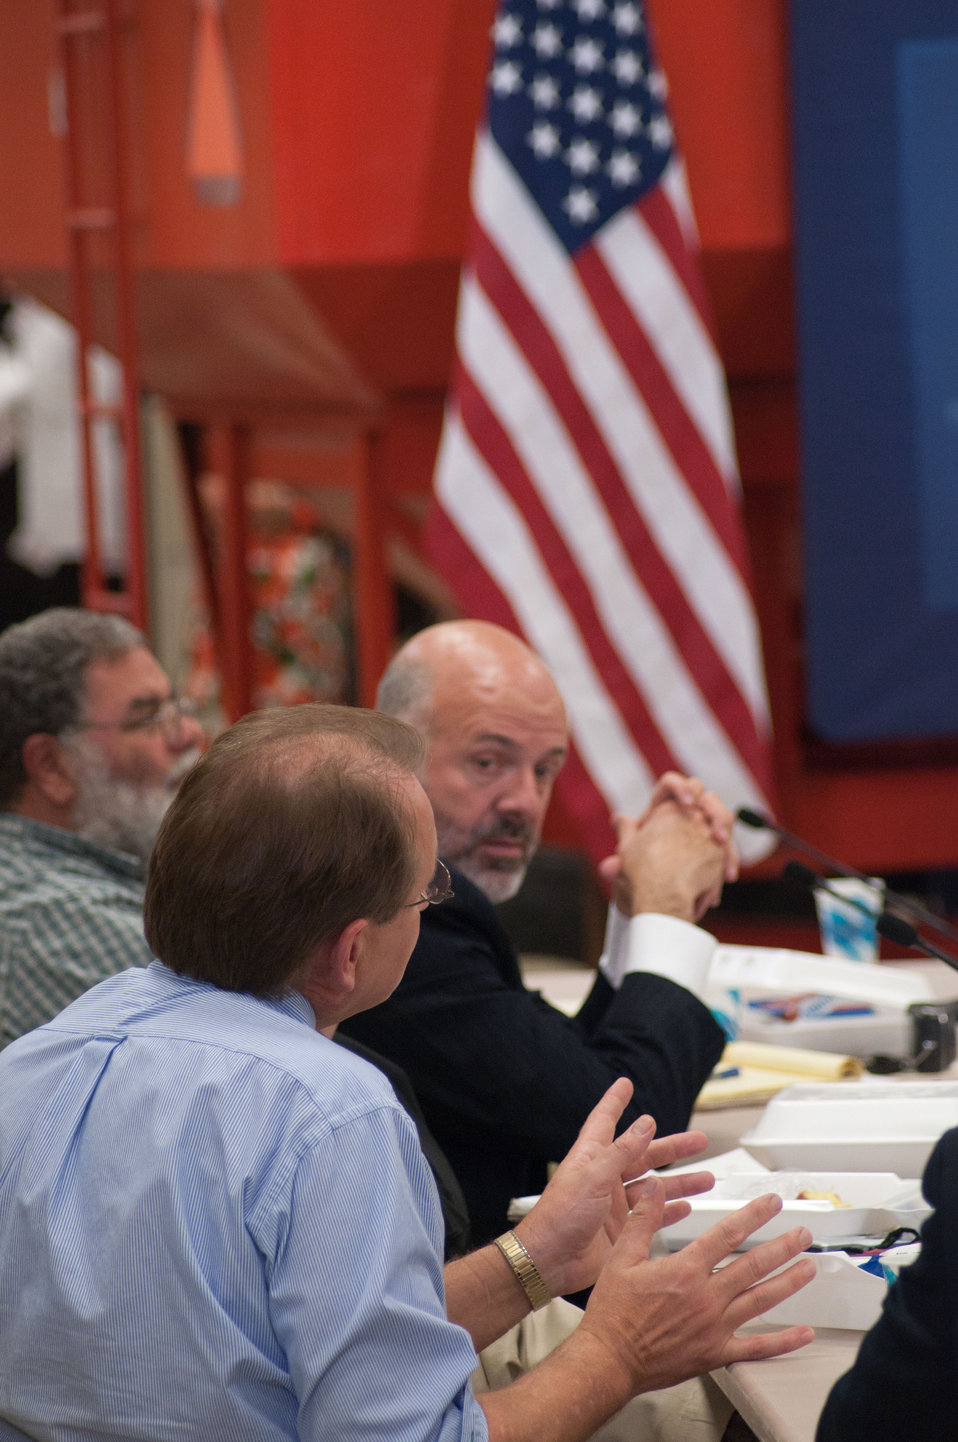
Center for Rural Affairs Chuck Hassebrook (left) speaks to University of Tennessee Joe DiPietro (right); other stakeholders; and U.S. Department of Agriculture Secretary and chair of the White House Rural Council, Tom Vilsack, during a meeting at the Northeast Iowa Community College, IA, for the White House Rural Economic Forum, on Tuesday, August 16, 2011.